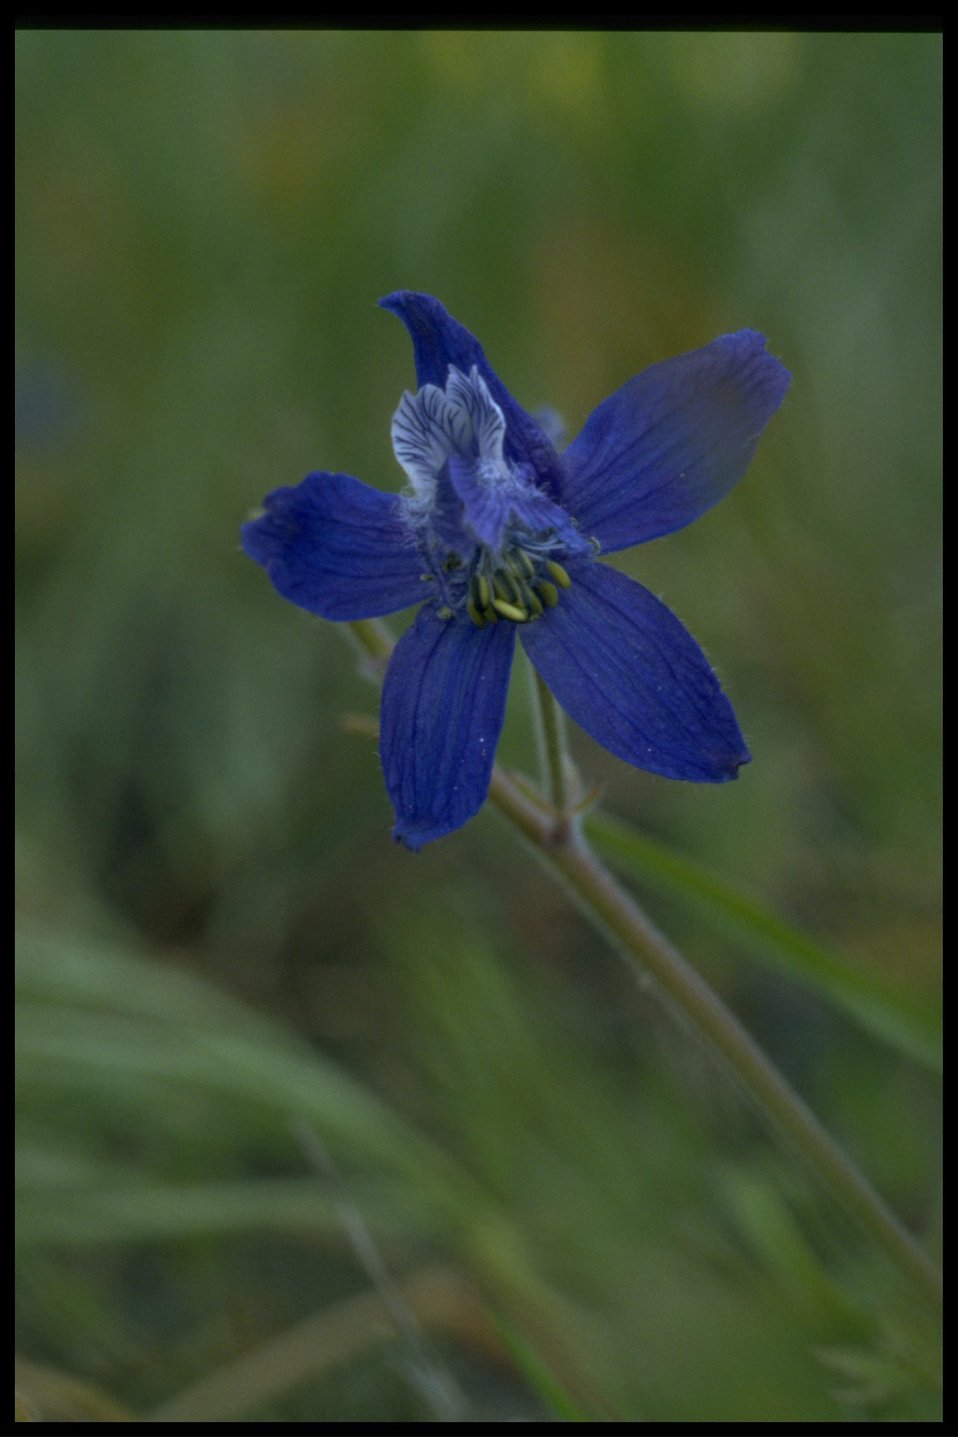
Closeup shot of upland larkspur (Delphinium nuttallianum).